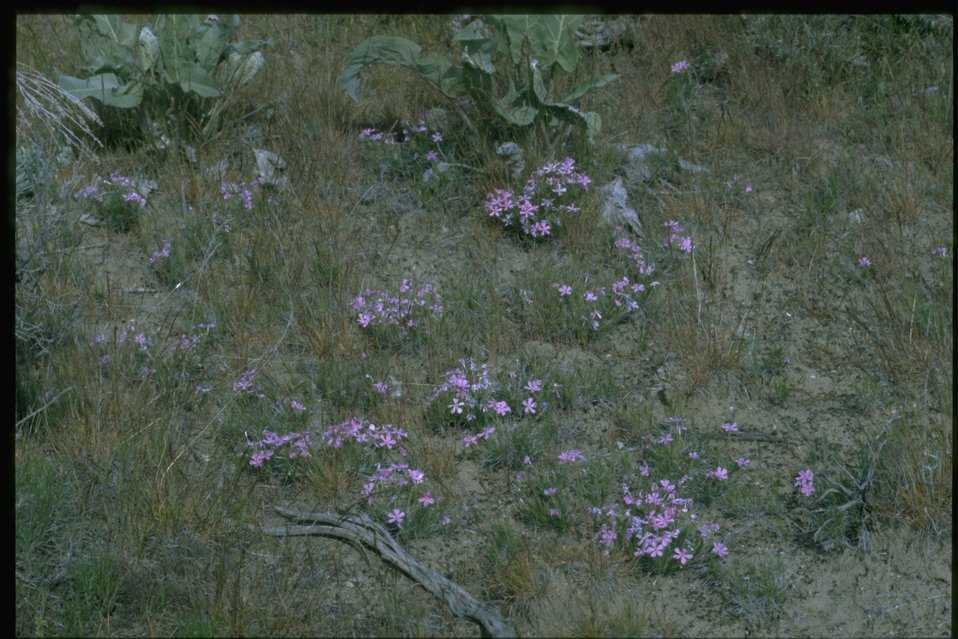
Farshot of Phlox habitat.